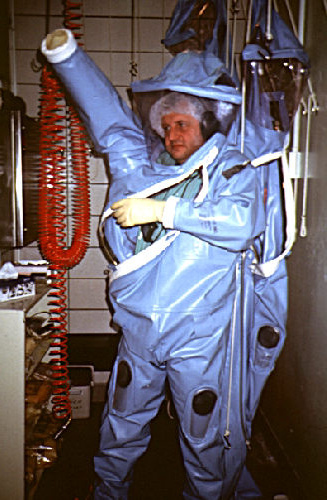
CDC scientist puts on a protective suit and face mask before entering Biosafety Level 4 laboratory (BSL-4), Atlanta, GA, USA.